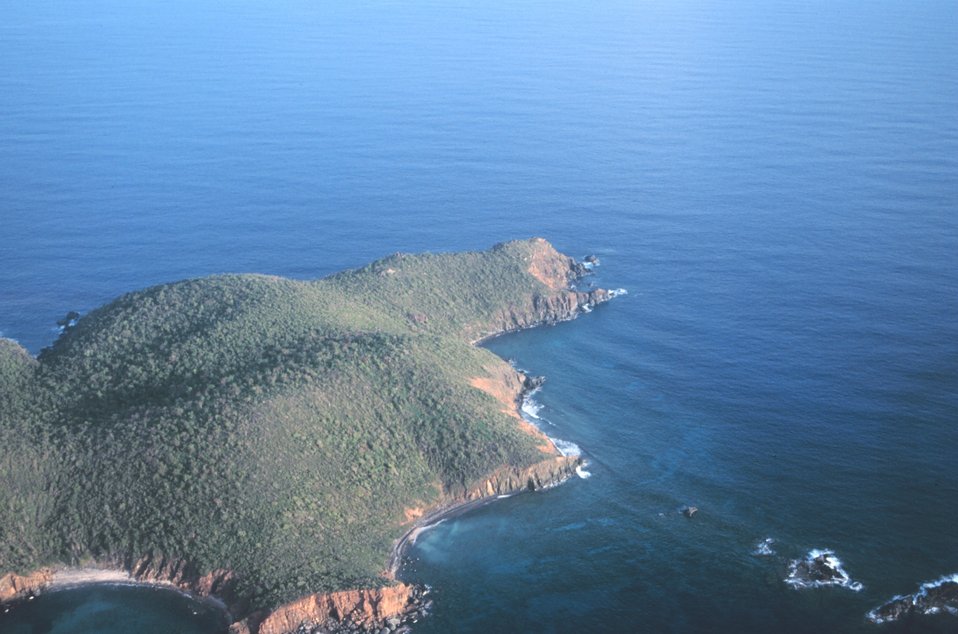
View of Fortuna Bay on approach to Cyril E. King Airport